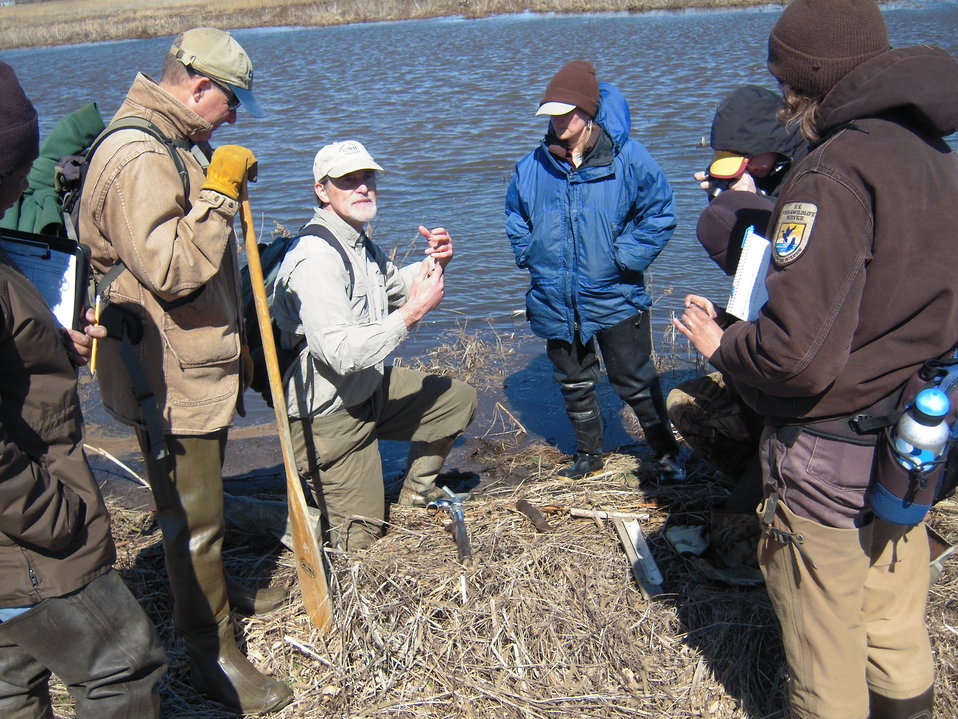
Salt Marsh field work